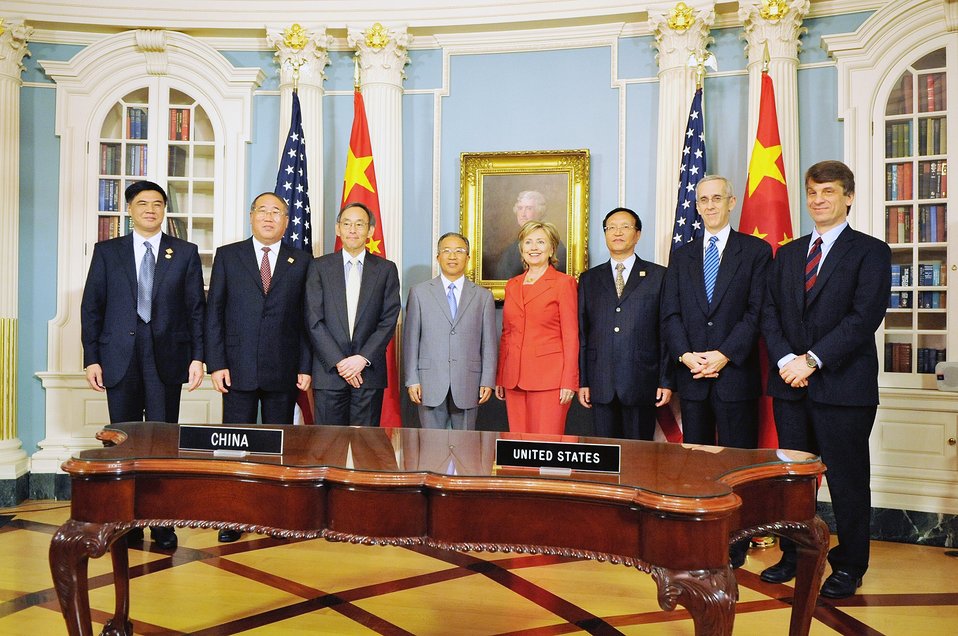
U.S.-China Strategic and Economic Dialogue

U.S. Secretary of State Hillary Rodham Clinton during the Memorandum of Understanding (MOU) signing in Treaty Room of the U.S. Department of State in Washington, DC July 28, 2009.